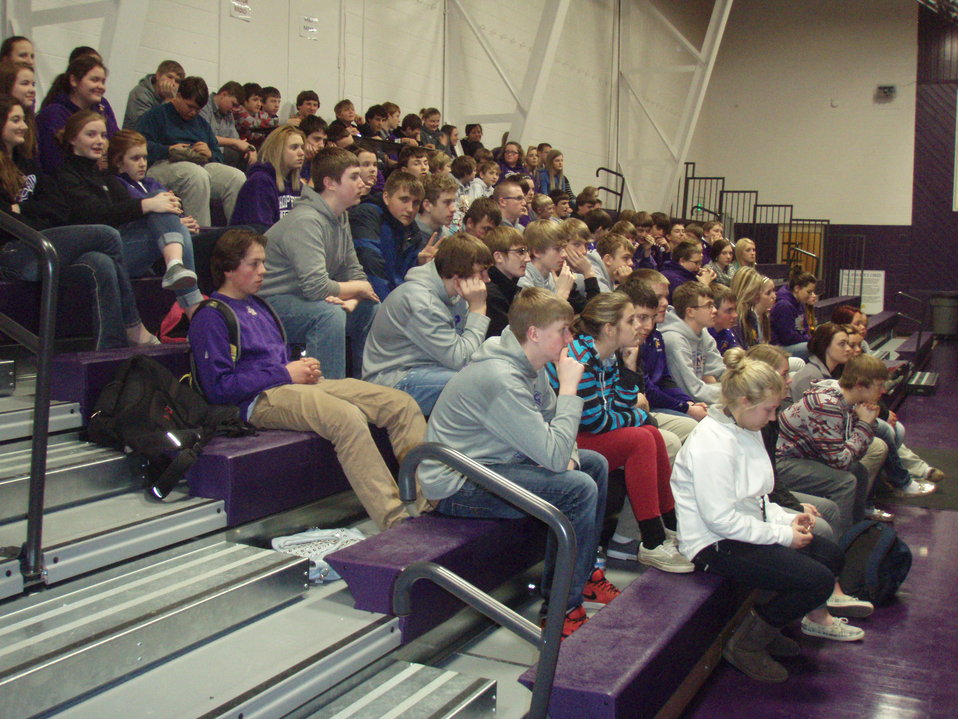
NDFW Assembly in North Dakota

Students Against Destructive Decisions (SADD) hosted an assembly with guest speaker Dr. Vicki Michels, Director of Addiction Studies at Minot State University, as part of SADD's 'Signature Events' program in Minot, North Dakota.